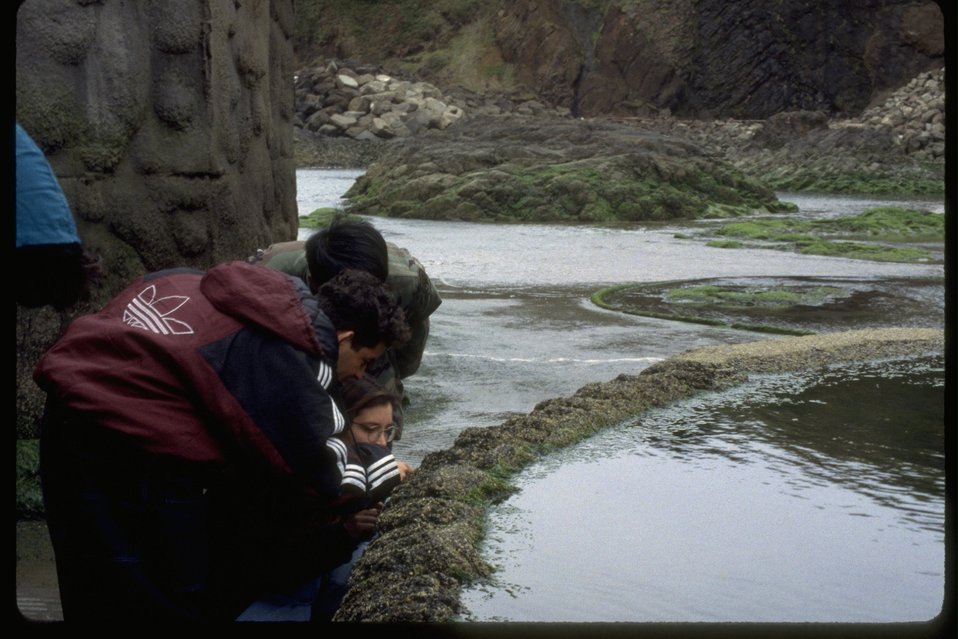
Students and visitors at the Quarry Cove Tidepool.